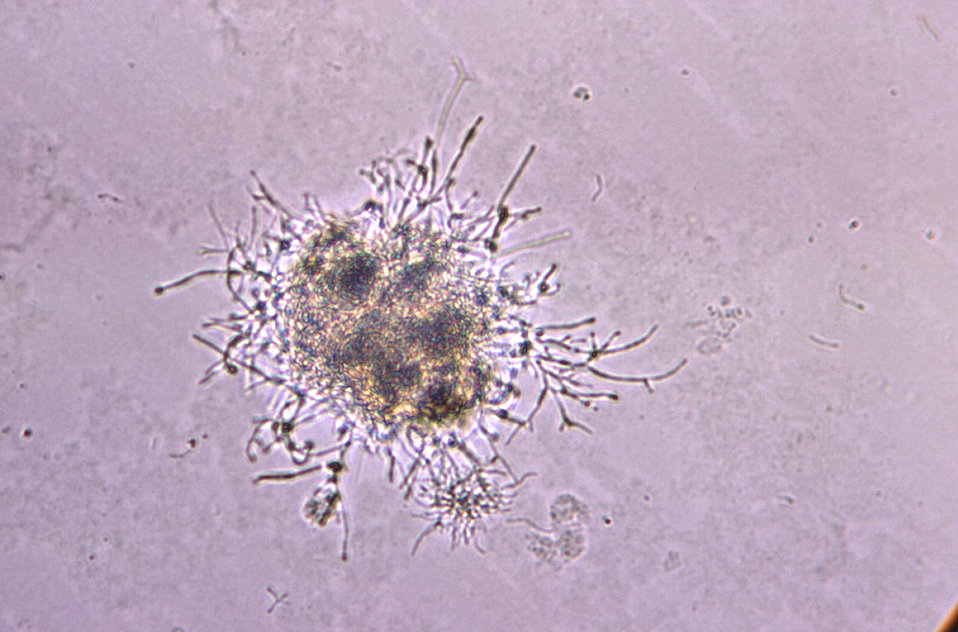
Magnified 380X, this image depicts the morphologic characteristics displayed by a Gram-positive, Actinomyces naeslundi bacterial microcolony, of the strain, W-1096, which was cultivated, for a 20 hour time period, on an unknown culture medium.